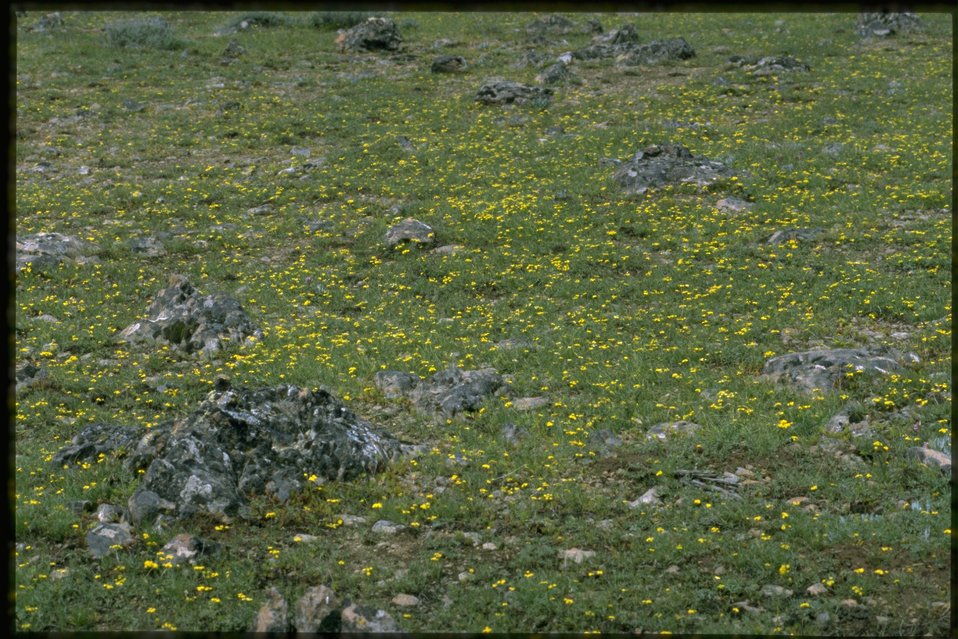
Scabland wildflower area with Nineleaf Lomatium in foreground.